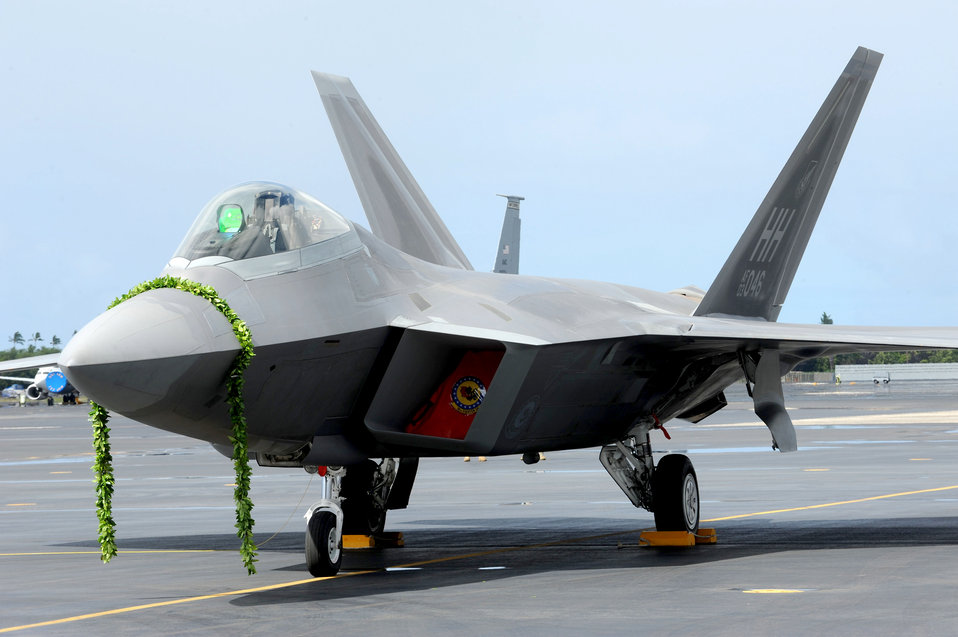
Hickam's total force integration

A lei is placed on an F-22 Raptor during an F-22 arrival ceremony July 9, 2010, at Joint Base Pearl Harbor-Hickam, Hawaii. The F-22 is the Air Force's newest fighter aircraft. The ceremony marks the beginning of the partnership between Hawaii Air National Guard and active-duty Air Force members flying the